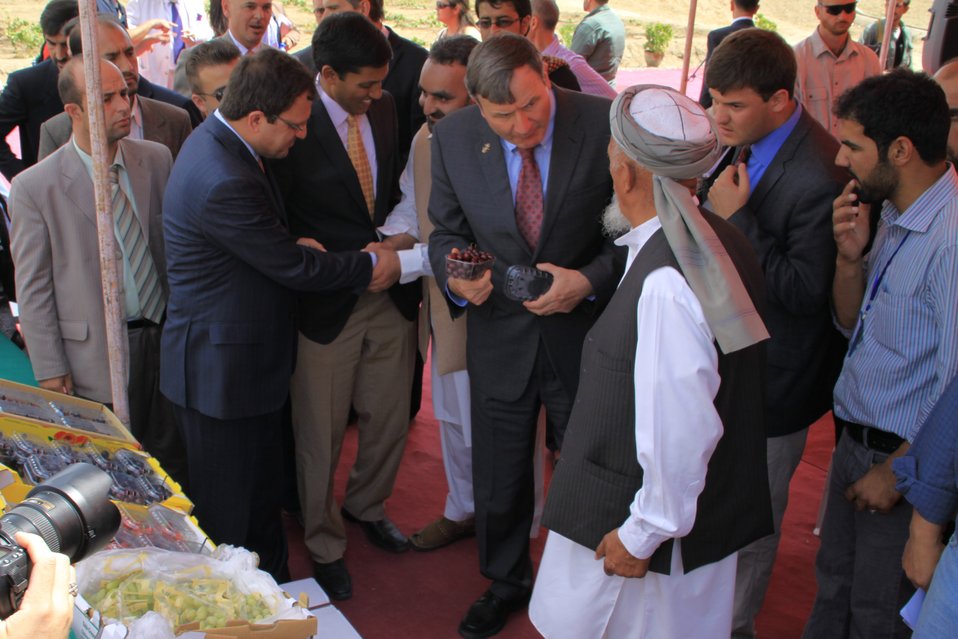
Badam Bagh Farm